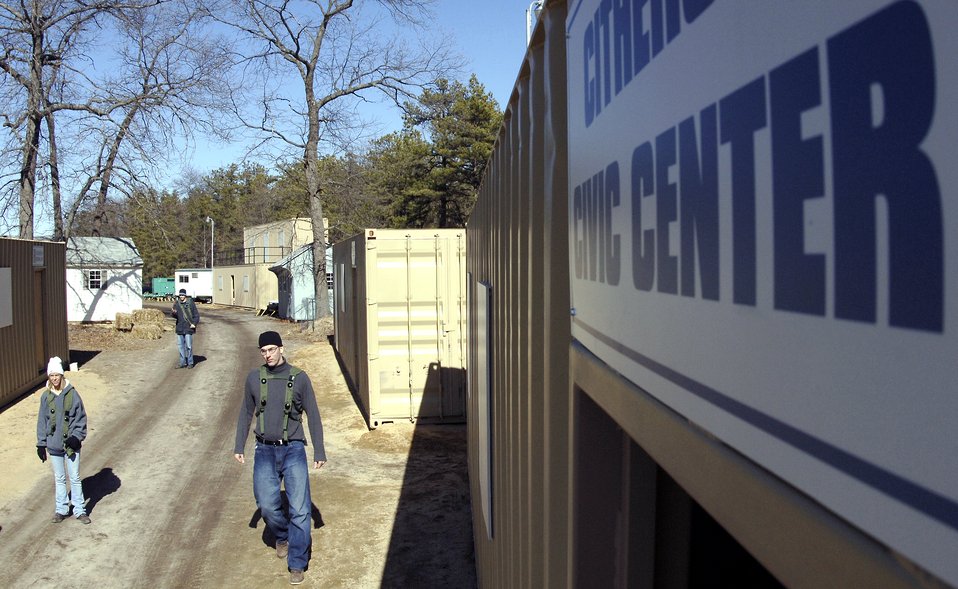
Exercise Eagle Flag

Airmen role-playing as